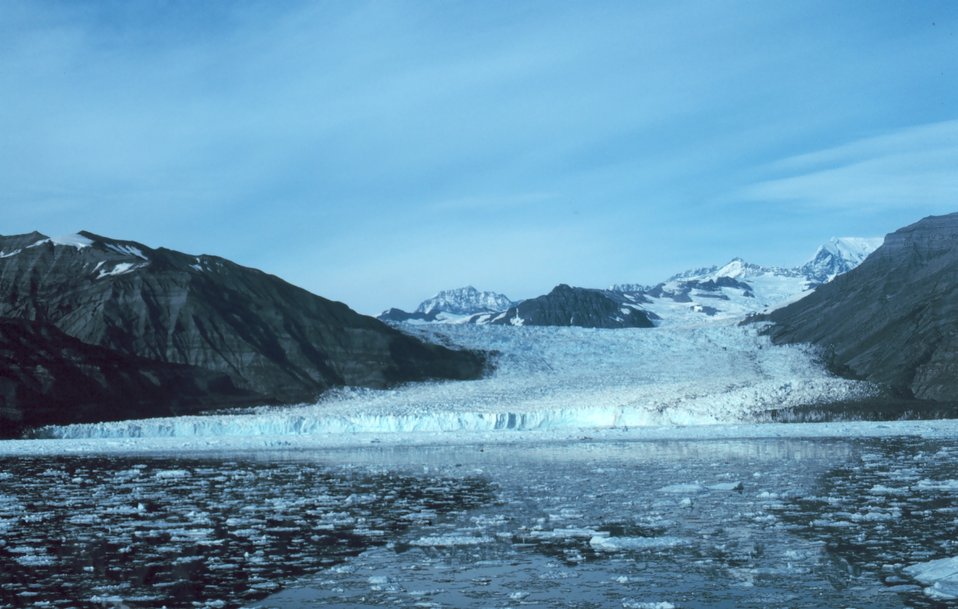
Guyot Glacier, Icy Bay